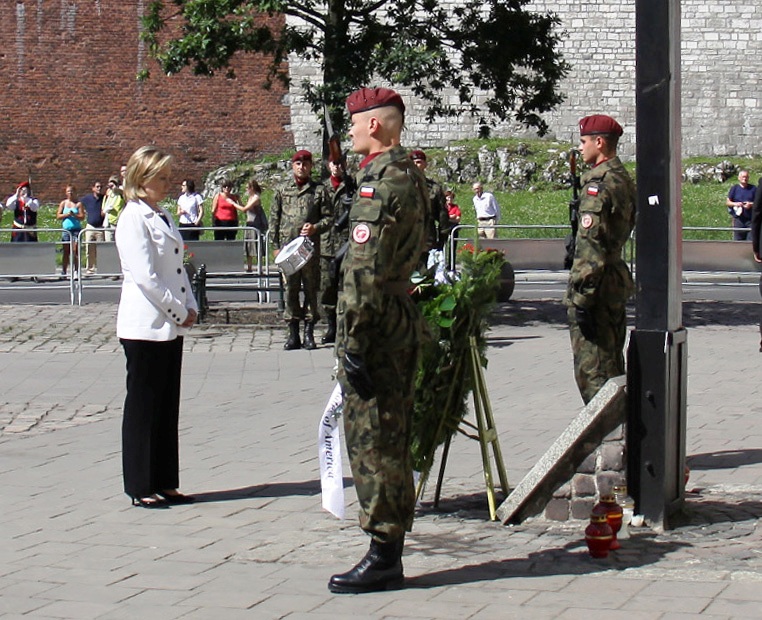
Secretary Clinton Lays a Wreath at Katyn Cross Memorial

U.S. Secretary of State Hillary Rodham Clinton lays a wreath at Katyn Cross Memorial to pay tribute to President Lech Kaczynski, the First Lady and the other 94 men and women who perished in the plane crash on April 10, 2010, in Smolensk en route to commemoration of the 70th anniversary of the 1940 Katyn massacre in Krakow, Poland, on July 3, 2010.